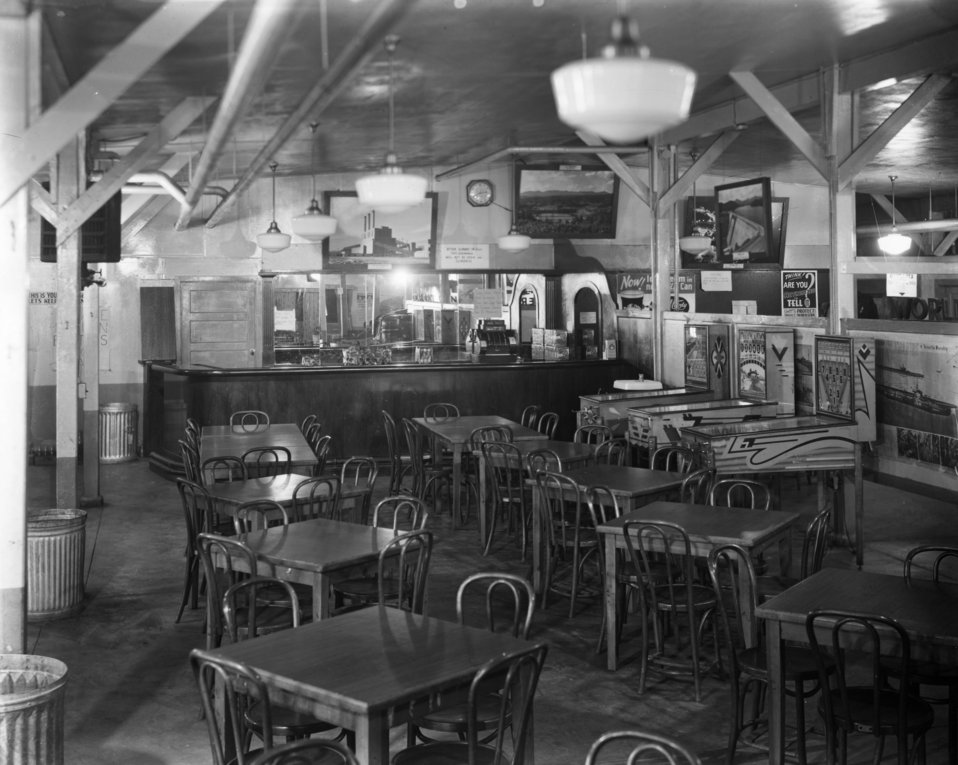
Army Activity at Oak Ridge